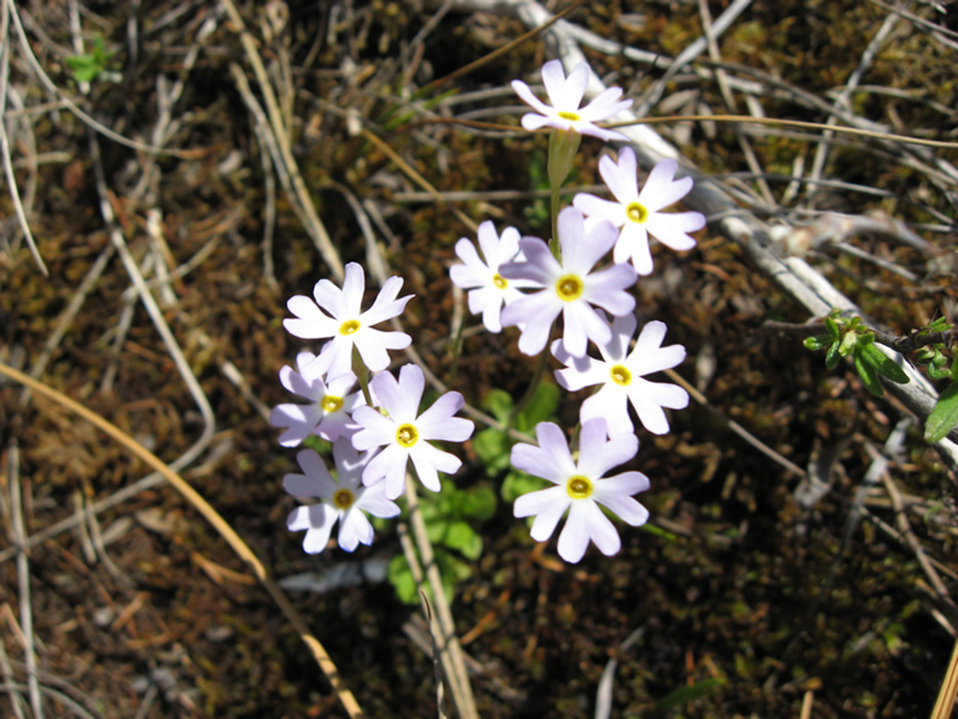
Birdseye lg HNF Pointe Aux Chenes Natural Area WW

Bird’s-eye primrose (Primula misstassincia) is found on the Hiawatha National Forest’s Pointe Aux Chenes Natural Area in Michigan. It is the only true primrose native to the region with concentrations found near the shores of the Great Lakes. Inland, it is found in local fens, calcareous banks and sandstone cliffs.